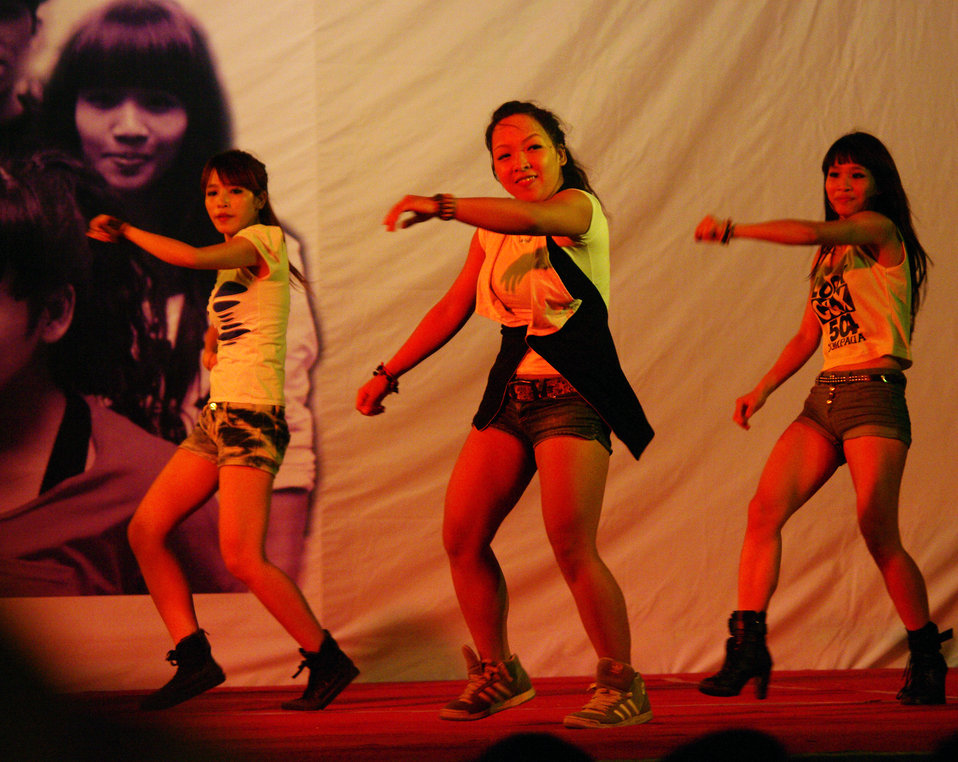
PEPFAR Sponsors Hip Hop to Stop the Spread of HIV